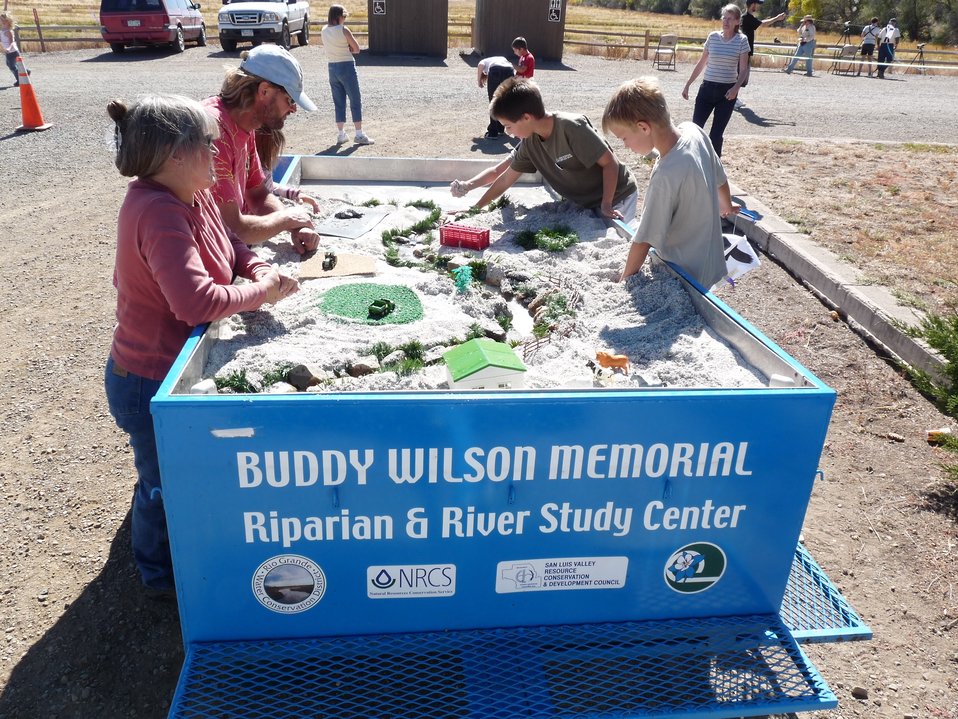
San Luis Valley National Wildlife Refuge

The 6th annual Kid's Crane Festival was held on 0ct. 2010 at the San Luis Valley NWR. Here, families can celebrate the migration of the sandhill crane and many other outdoor activites! In this photo, visitors learn about hydrologic cycle and how it impacts watersheds.